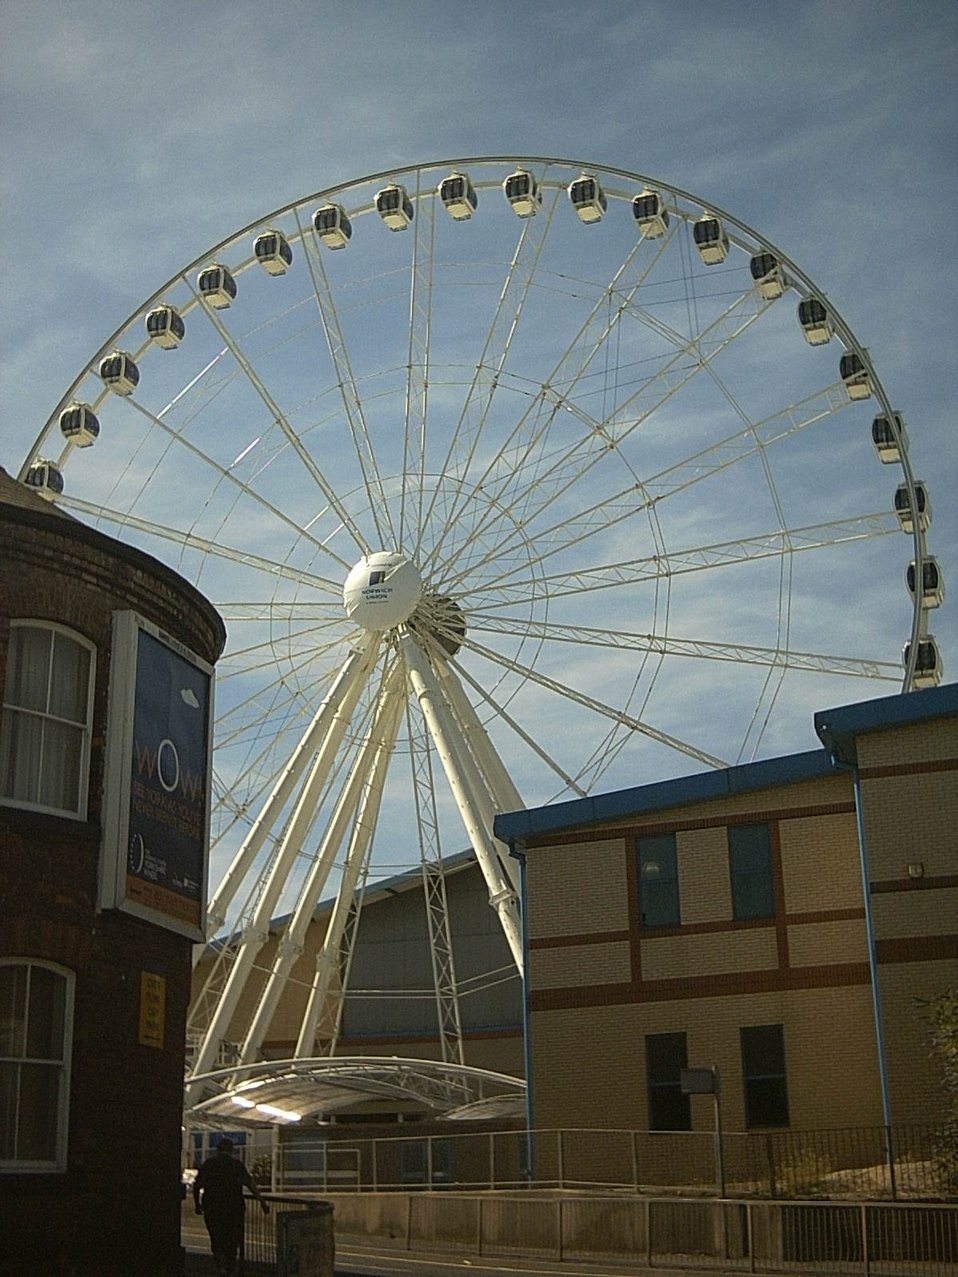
A view of the south side of the 54 metre high Yorkshire Wheel, that was installed at the National Railway Museum in York. It was sited 53°57′35.81″N 1°5′44.42″W / 53.9599472°N 1.0956722°W / 53.9599472; -1.0956722 next to and in line with the southern wall of the museum's Great Hall. Construction started in March 2006 and the wheel operated from 12 April 2006 until 2 November 2008, being dismantled shortly afterwards. The view of it here is obscured on the left by the building that stands at the fork of Leeman Road and Cinder Lane, and on the right by the museum's workshop building that adjoins the Great Hall.